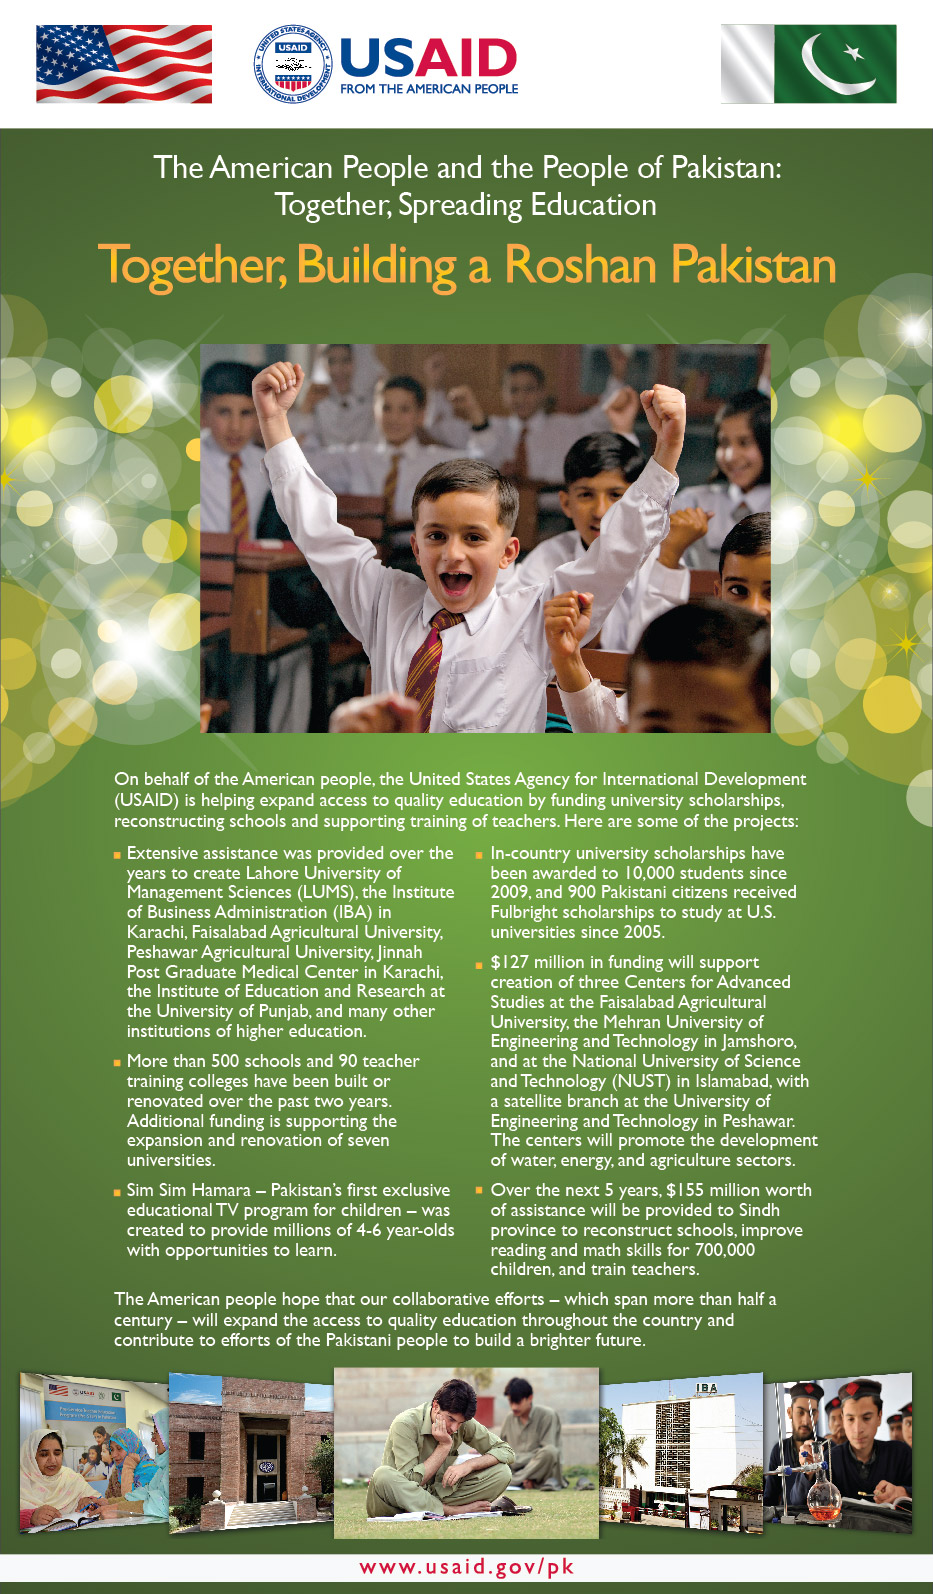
Together, Spreading Education Program in Pakistan